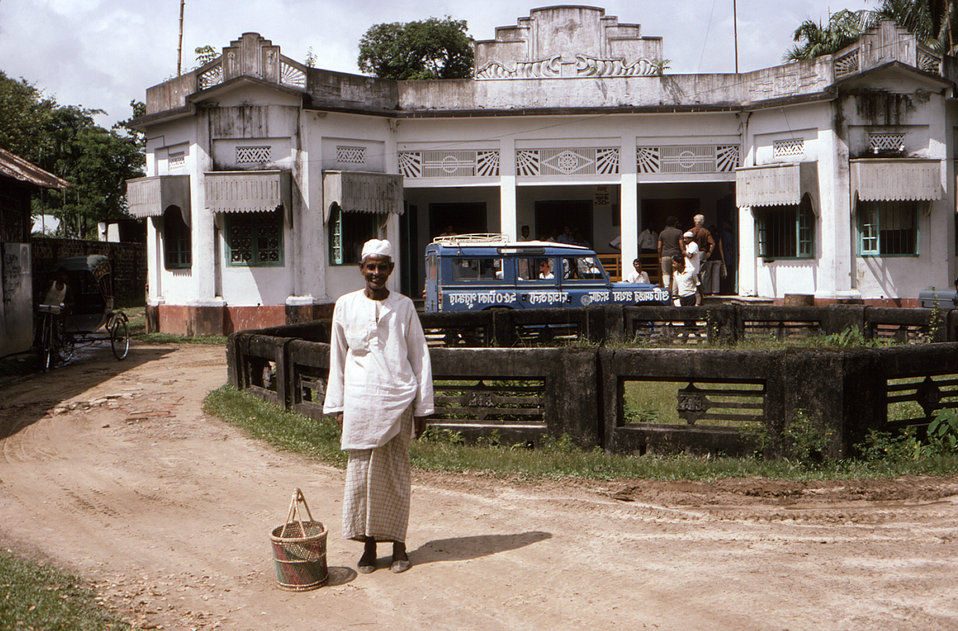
Depicted in this historic 1975 image was, a Bangladeshi man standing in front of a District Health Office that was located in the north-eastern Bangladesh city of Sylhet.